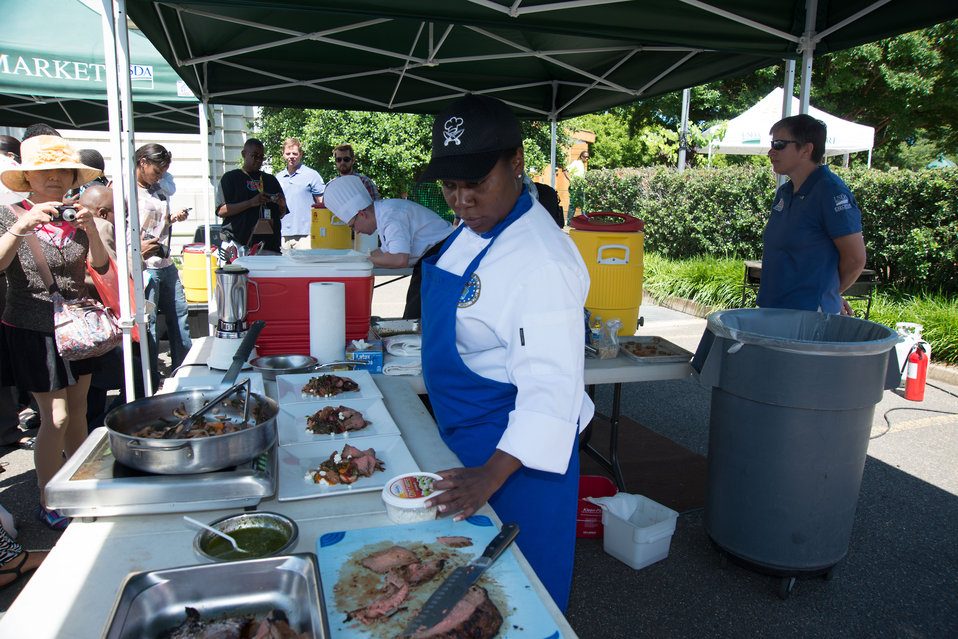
U.S. Air Force Staff Sergeant (SSgt) Tasha N. Goodrich prepares a meal at the Military Chefs barbeque battle held at the opening of the U.S. Department of Agriculture’s (USDA) Famers Market in the east parking lot at USDA on Friday, Jun. 6, 2014.